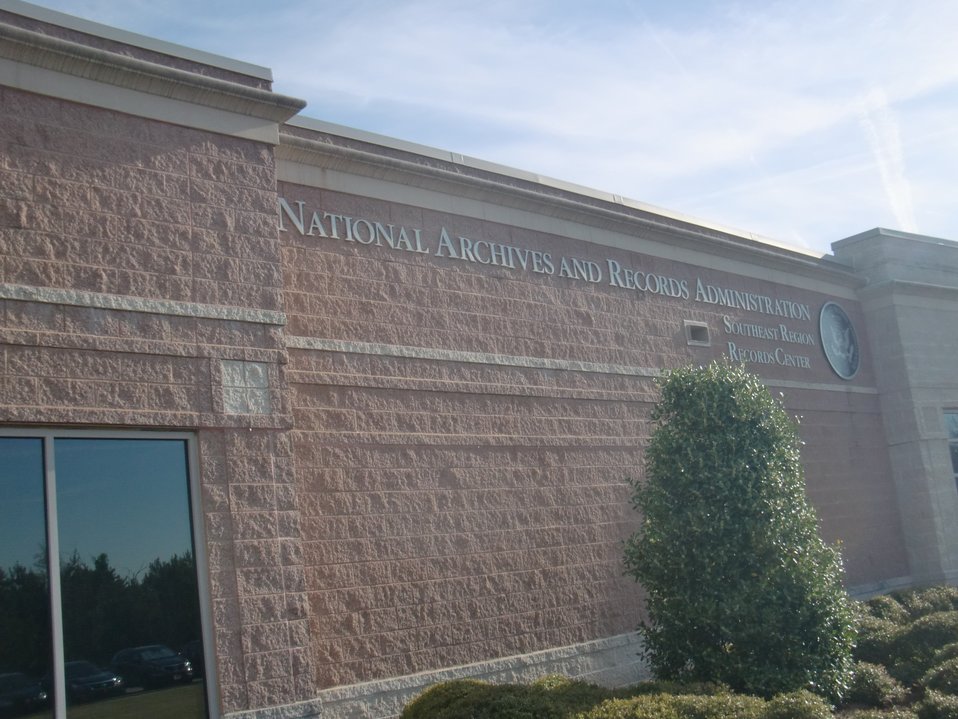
External shot of building; Location: Atlanta Federal Records Center, Ellenwood, GA